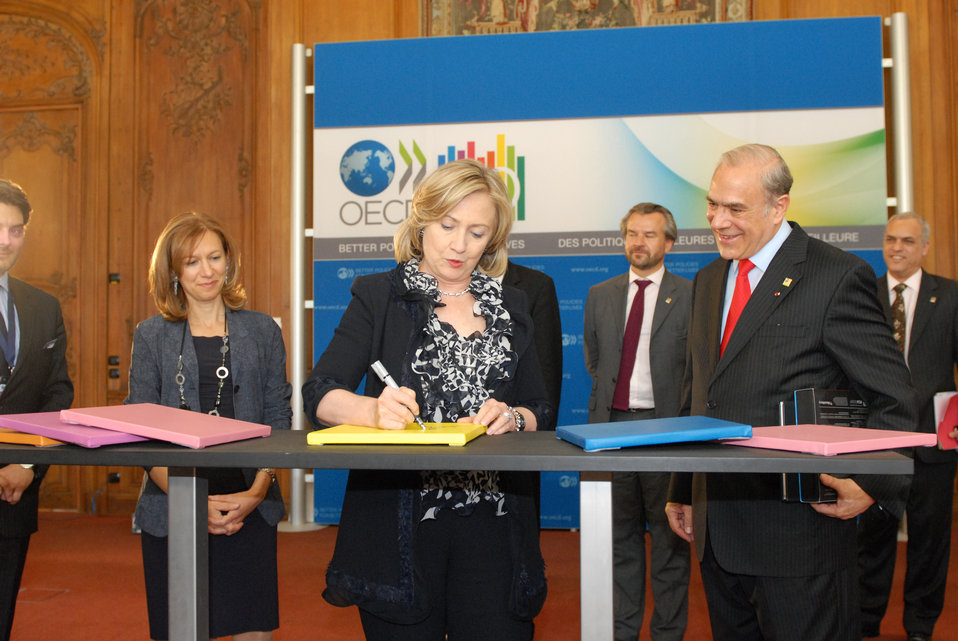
Secretary Clinton and Foreign Leaders Sign the Commemorative Tiles

U.S. Secretary of State Hillary Rodham Clinton and foreign leaders sign commemorative tiles on the occasion of the 50th Anniversary of the Organization for Economic Cooperation and Development (OECD), in Paris, France, on May 25, 2011.